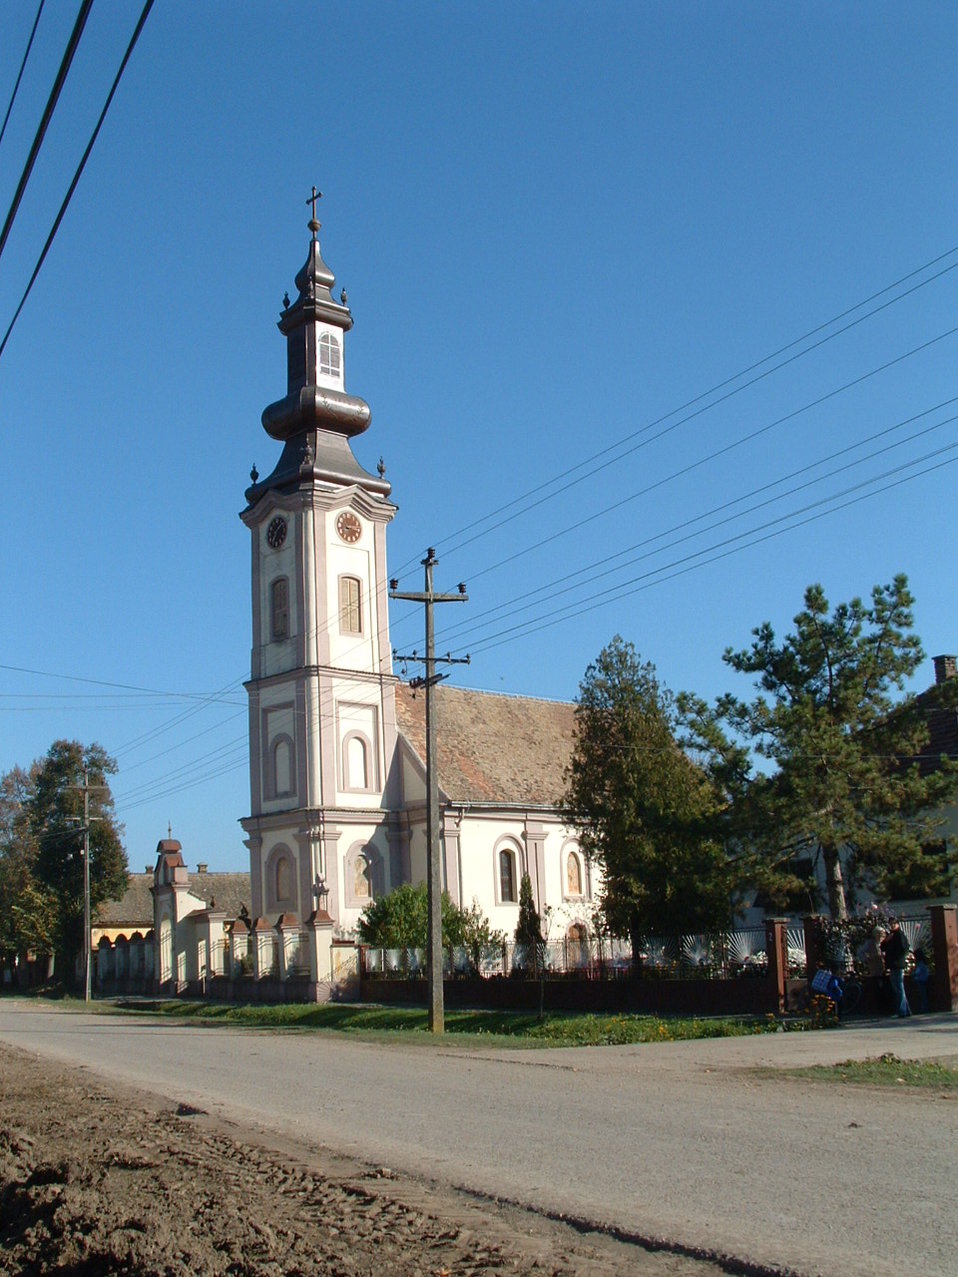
Српски / srpski: Кузмин - Православна црква